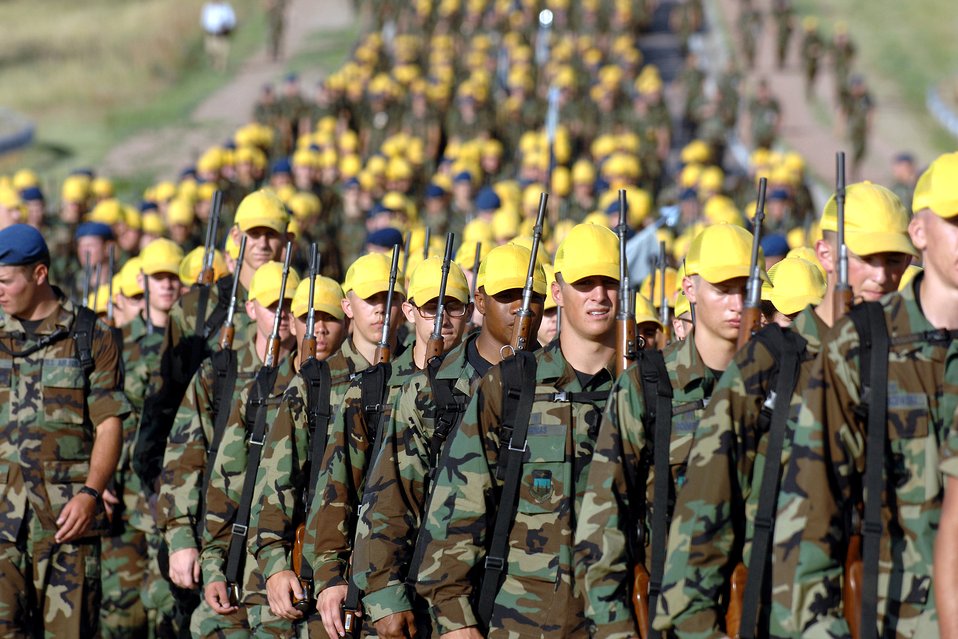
A long two weeks

Basic cadet trainees march to Jacks Valley at the U.S. Air Force Academy, Colo. to begin two weeks of training that will test their stamina and determination. Included will be weapons training, confidence and assault training, drill evaluations, tent inspections and aerobic and physical fitness tests.